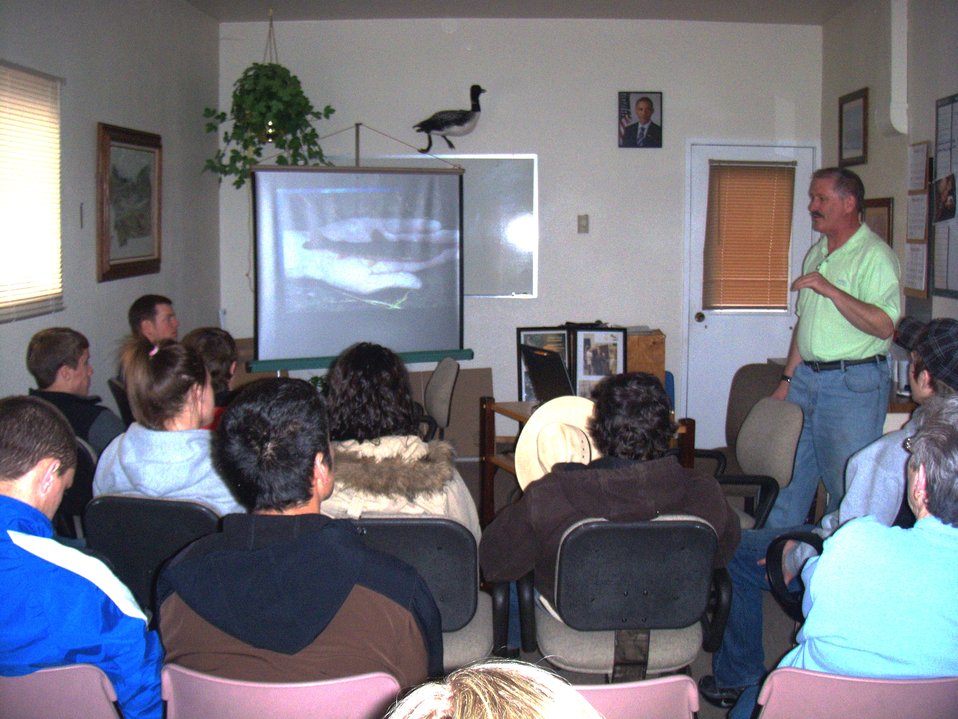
High School Students Travel to Creston National Fish Hatchery

Students travel 170 miles from Corvallis High School to hear a bull trout lecture from Wade Fredenburg, USFWS Bull Trout Coordinator/Fisheries Biologist. Wade works for the Enviroment Services Sub Office stationed at the Creston National Fish Hatchery.